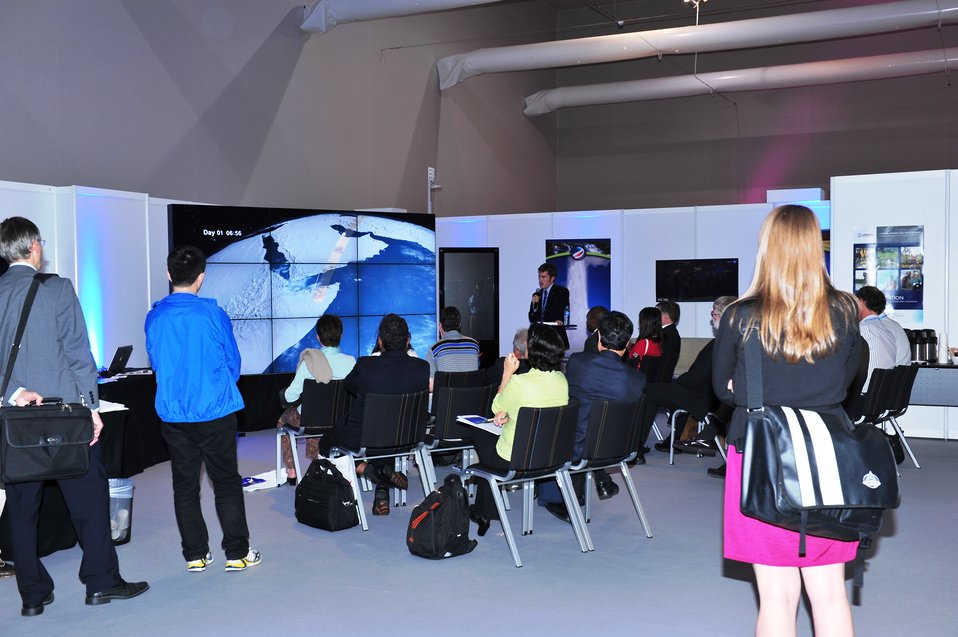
NASA's Dr. Joel McCorkel Presents at the U.S. Center

Dr. Joel McCorkel shows visitors NASA data visualizations at the U.S. Center at the 18th Session of the Conference of the Parties to the UN Framework Convention on Climate Change (COP-18) in Doha, Qatar, November 30, 2012.